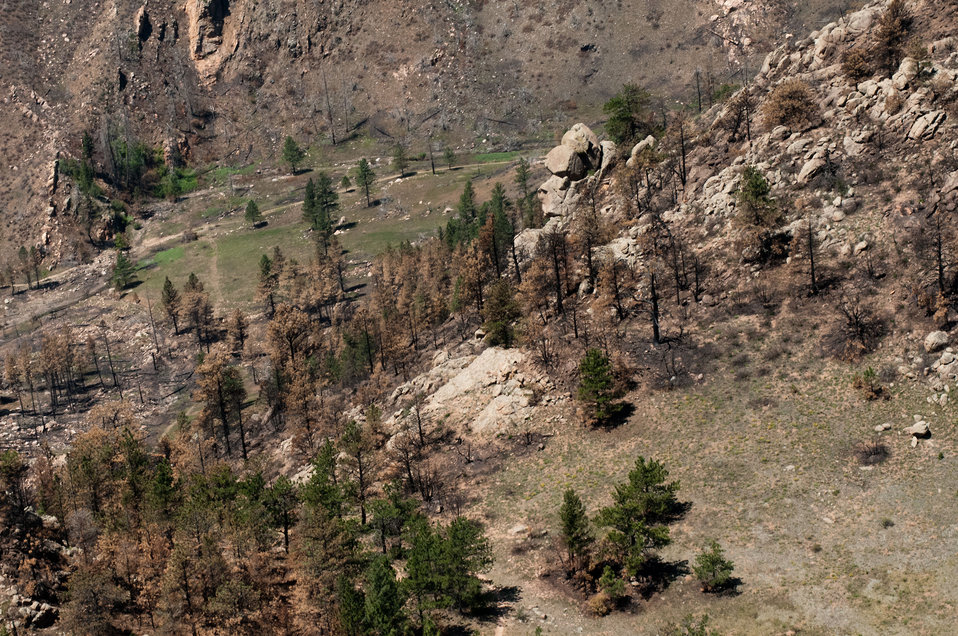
The aerial application of yellow straw continues to mitigate soil and ash runoff from the mountainous terrain leading to Seaman Reservoir, drinking water resource for the City of Greeley, on Friday, July 20, 2012, near Fort Collins, Colo. Red areas are burnt trees with pine needles that will fall tho the ground and form a mulch. Green areas are the remaining healthy trees that provide shade and protection to promote the growth of ground cover plants and shrub. Because of steep terrain, helicopters must be used to quickly deliver 1,800 tons of straw to Forest Service lands, and private and other lands that receive a seed mix and straw to promote ground cover plant growth on ash-covered lands. In total, 1,800 tons of straw will be applied during the 14-day operation. One quarter of the cost was paid by the City of Greeley and the U.S. Department of Agriculture funded the remainder. The Hewlett Gulch Fire was started by a camper’s alcohol stove, on May 14, at the saddle of a picturesque mountain ridge along the Hewlett Gulch Trail of Poudre Canyon, in the Roosevelt National Forest, 60 miles north of Denver. At it’s peak, more than 400 firefighters were battling fires being pushed by 50 mph winds that helped blacken over 12-square-miles of dry ground cover, brush and trees. Many of the trees were already dead and tinder dry from beetle-kill. The water in the reservoir remains clean and clear, while downstream water flow has gone from famous Colorado clear water to nearly black flows of water heavily laden with ash, silt, and burnt debris that recent thunderstorms have already washed down from the mountainsides.